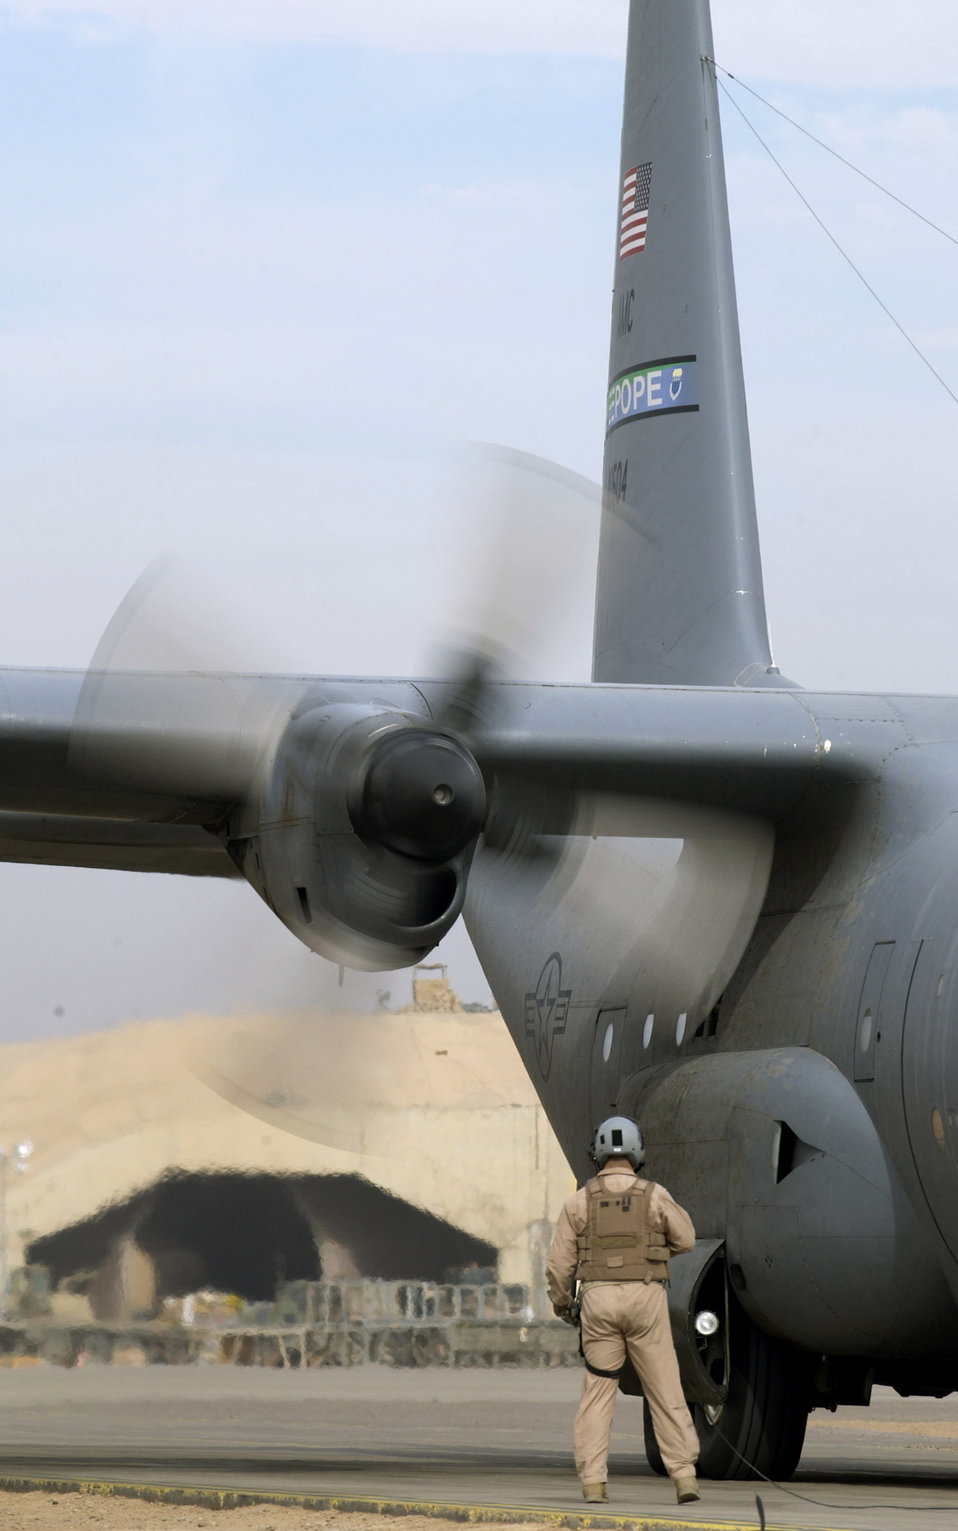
Pre-flight inspections

SOUTHWEST ASIA -- Tech. Sgt. Bryan Quinn conducts a pre-flight inspection on a C-130 Hercules prior to taking off from here Dec. 4. The C-130s are supporting both operations Iraqi Freedom and Operation Enduring Freedom. Sergeant Quinn is a loadmaster with the 379th Air Expeditionary Wing.